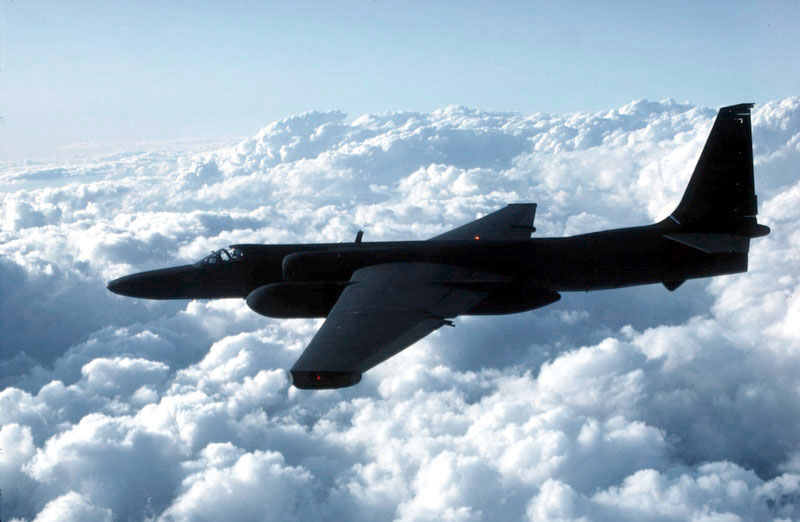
U-2 in flight

FILE PHOTO -- The U-2